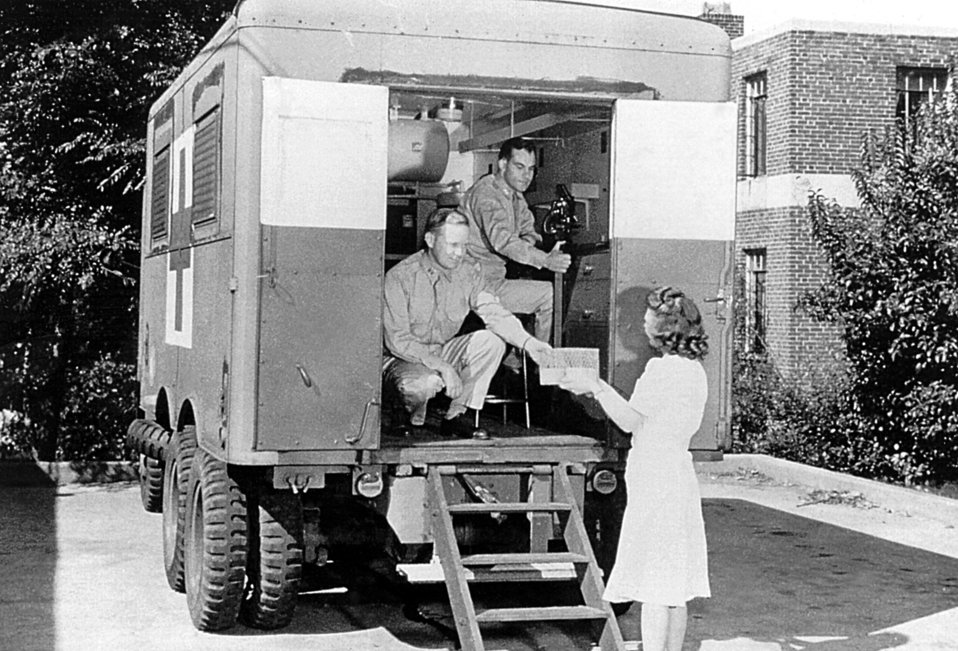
This historical image depicts two American Red Cross employees handing out medical supplies to a woman from a mobile unit.